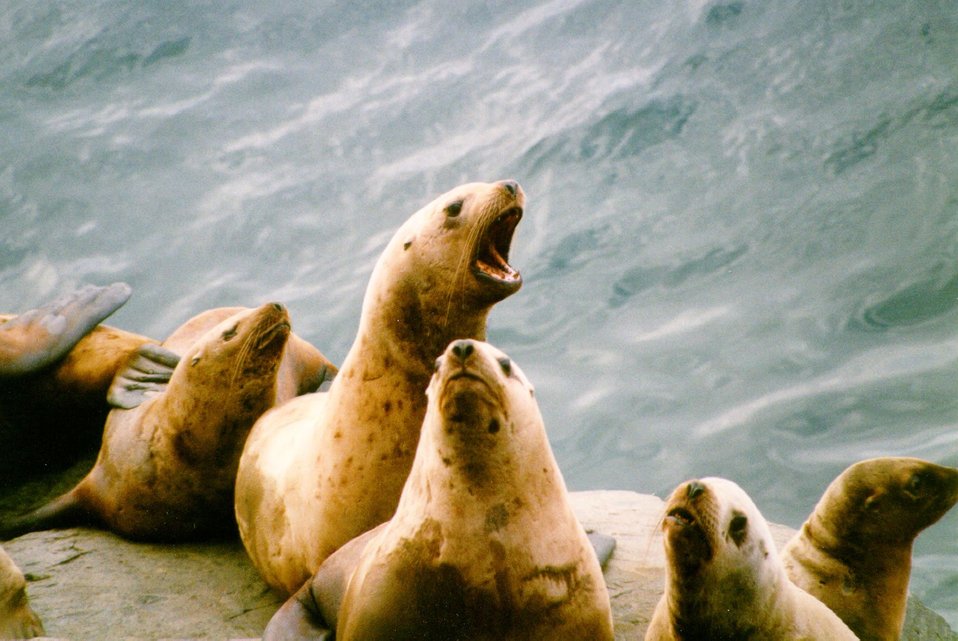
Endangered Steller sea lion.